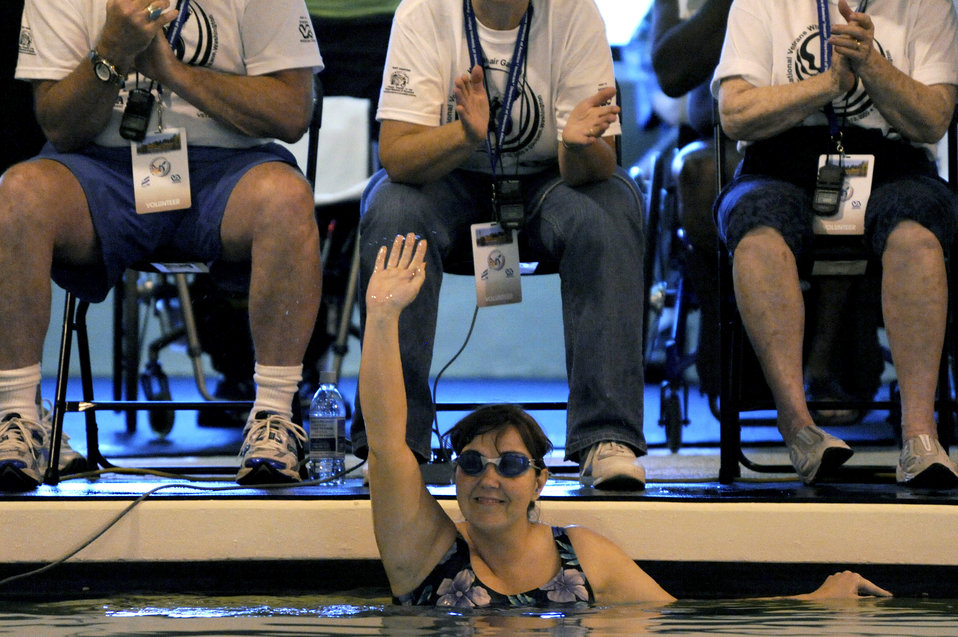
Former Airman competes in veterans Wheelchair Games

Terri Fuda waves to the crowd as she competes in the swimming competition held at the Whitworth University swimming pool during the 29th National Veterans Wheelchair Games July 15 in Spokane, Wash. Ms. Fuda is an Air Force veteran from Gillespie, Ill.